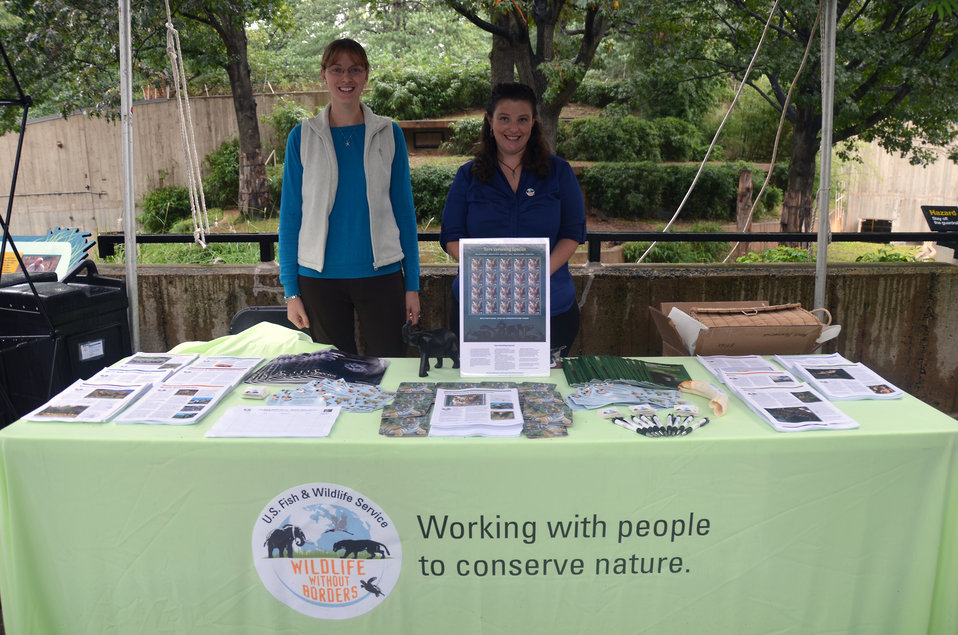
Save Vanishing Species Stamp First Day of Issue